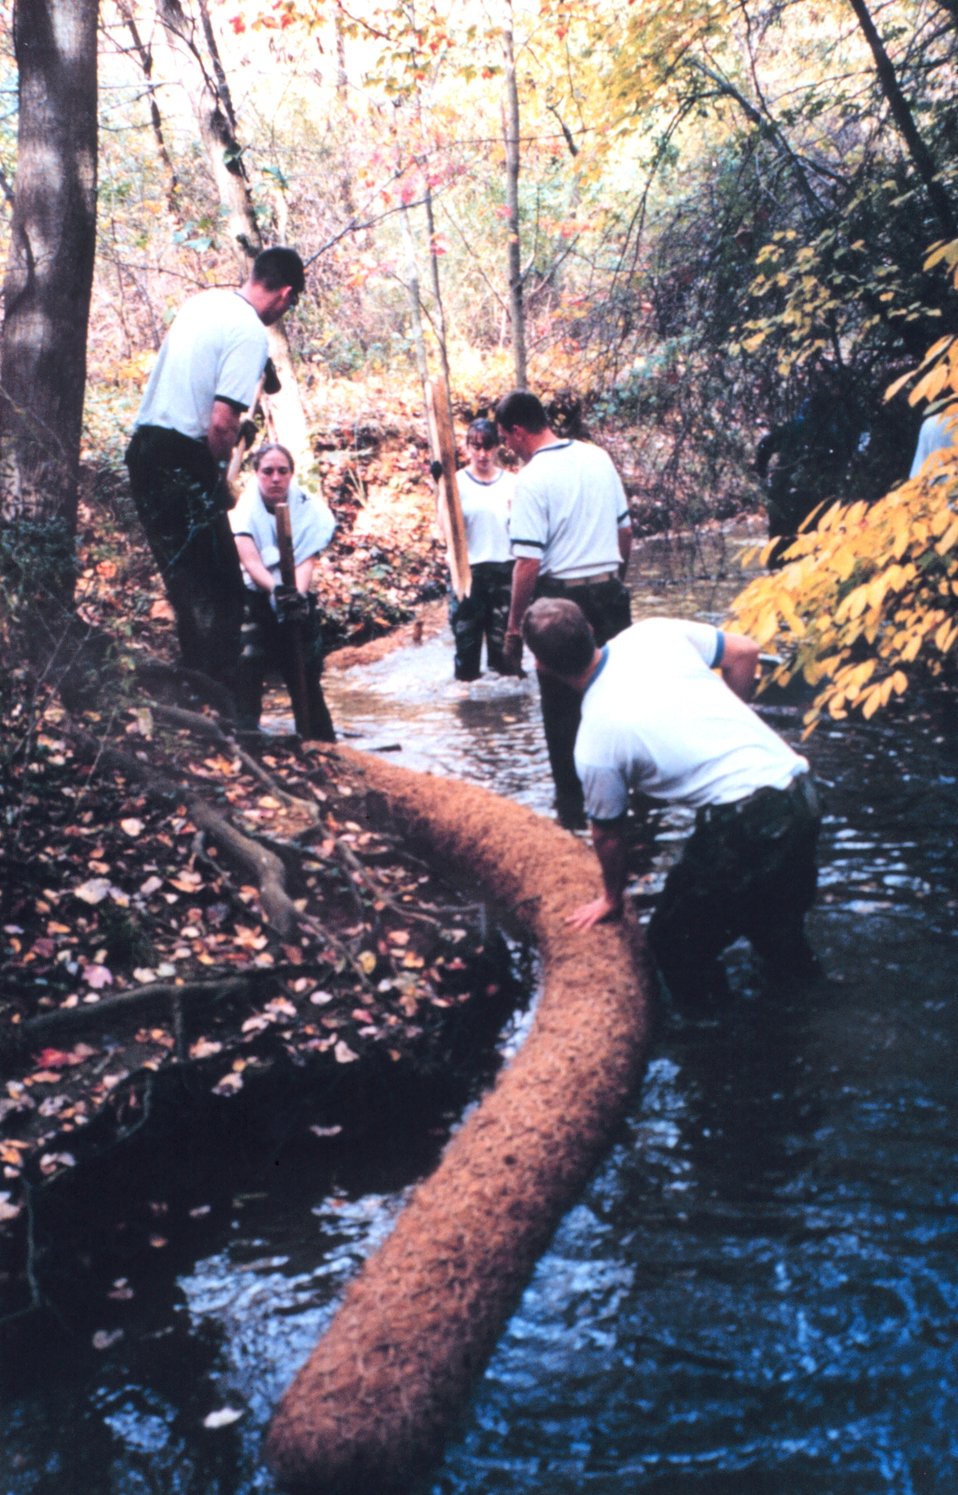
Installing Biologs to abate erosion problems along Spa Creek.